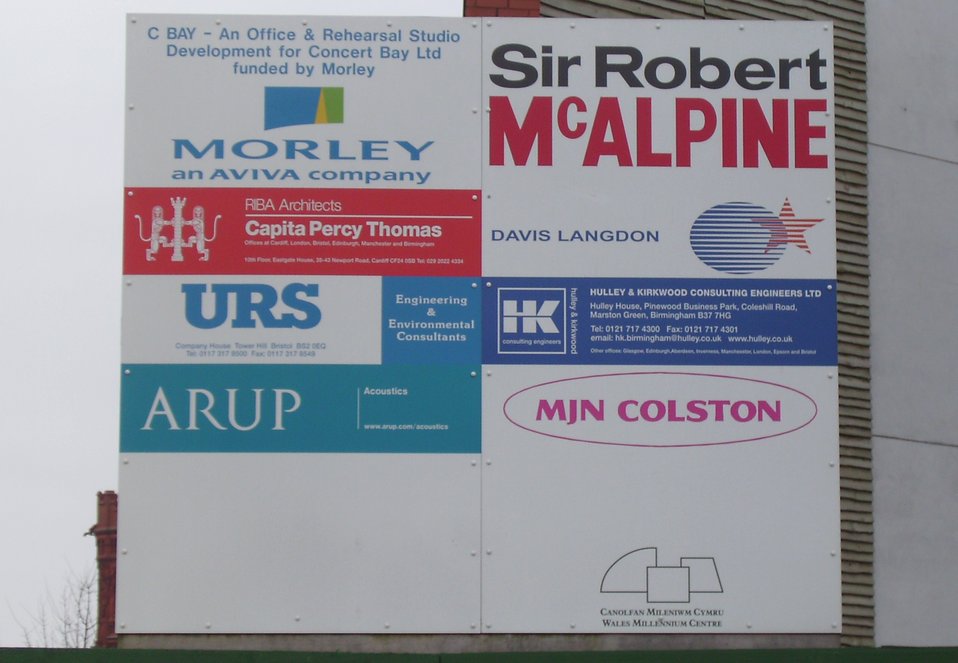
Construction Board, Wales Millennium Centre, Cardiff Bay, Cardiff, Wales